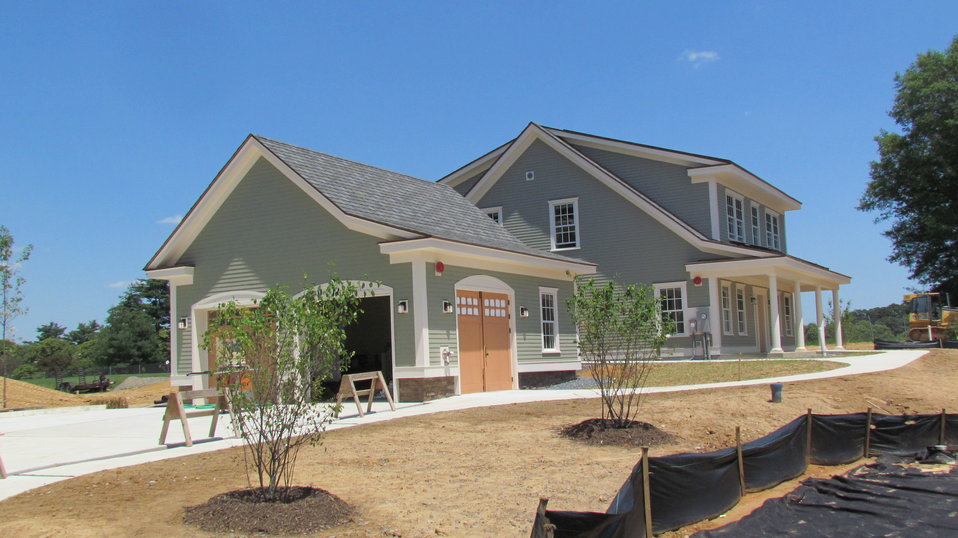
Picture showing completed exterior of facility with landscaping in place.